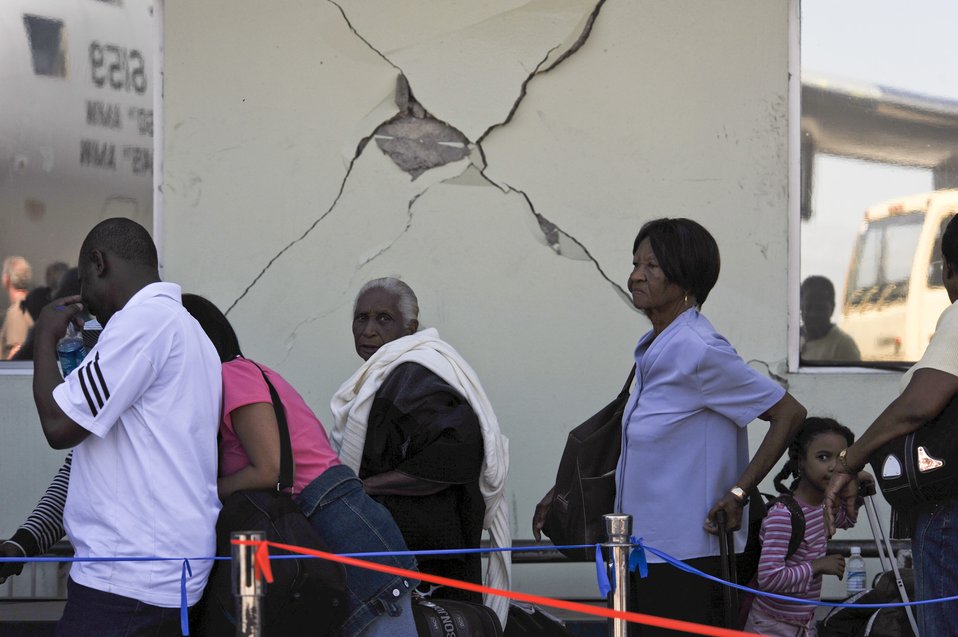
Evacuation

With a cracked pillar as a reminder, a group of Haitians wait to board a C-17 Globemaster III at Toussaint L'Ouverture International Airport in Port-au-Prince, Haiti, Jan. 23, 2010. Aircraft from all over the world are flying into the airport to drop off humanitarian aid and transport people out of the country in the aftermath of the devastating earthquake Jan. 12.